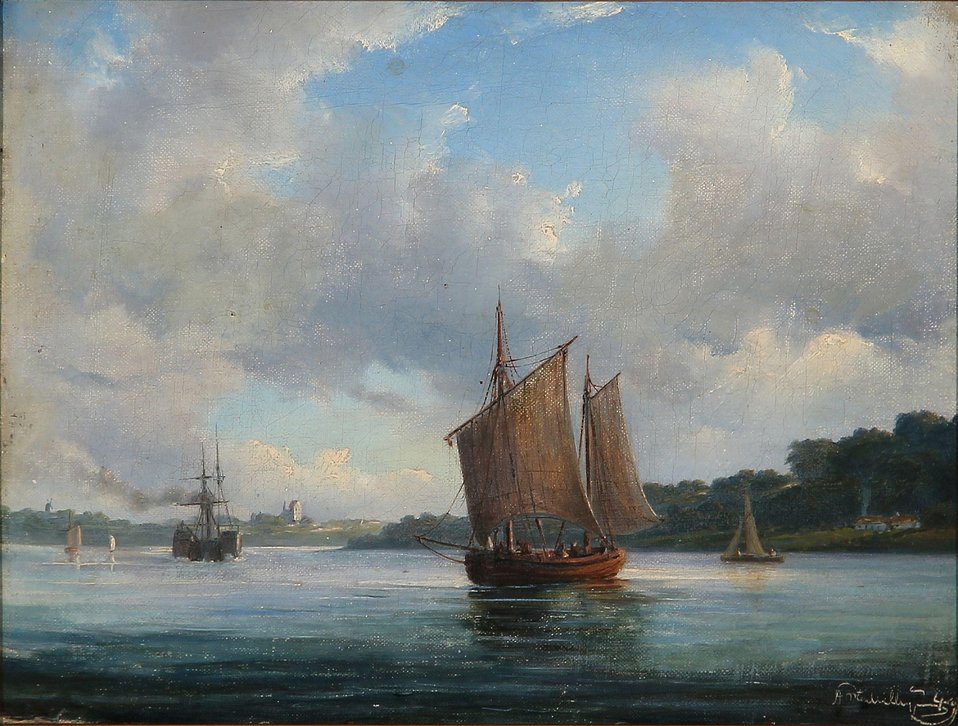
Anton Melbye - Fjord scene med fiskerbåde og en hjuldamper (1849)